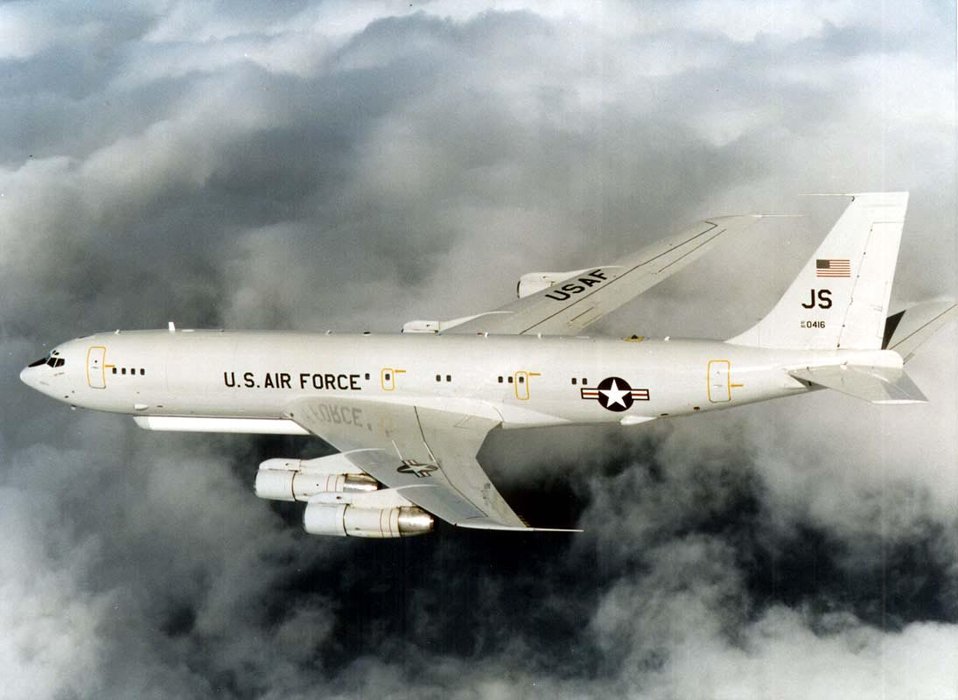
E-8C

FILE PHOTO -- The E-8C Joint Surveillance Target Attack Radar System is the only airborne platform in operation that can maintain realtime surveillance over a corps-sized area of the battlefield. A joint Air Force - Army program, the Joint STARS uses a multi-mode side looking radar to detect, track, and classify moving ground vehicles in all conditions deep behind enemy lines.